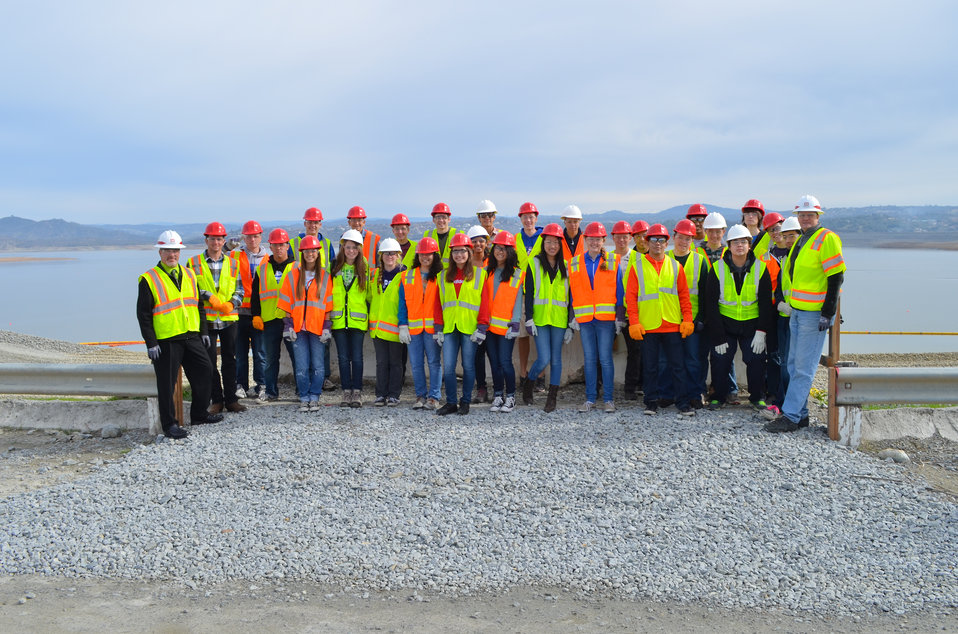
Folsom High School visit Folsom Dam auxiliary spillway construction during National Engineer Week.

Greg Crannell, vice principal of Folsom High School in Folsom, Calif. brought nearly 30 physics and engineering students to visit the U.S. Army Corps of Engineers Sacramento District's Folsom Dam auxiliary spillway construction site February 18, 2014 in Folsom, Calif. The group's visit coincided with National Engineer Week which is typically celebrated in February to recognize engineering feats such as the spillway. The Corps, together with the U.S. Bureau of Reclamation and state and local partners, is building the spillway to reduce flood risk throughout the Sacramento region.